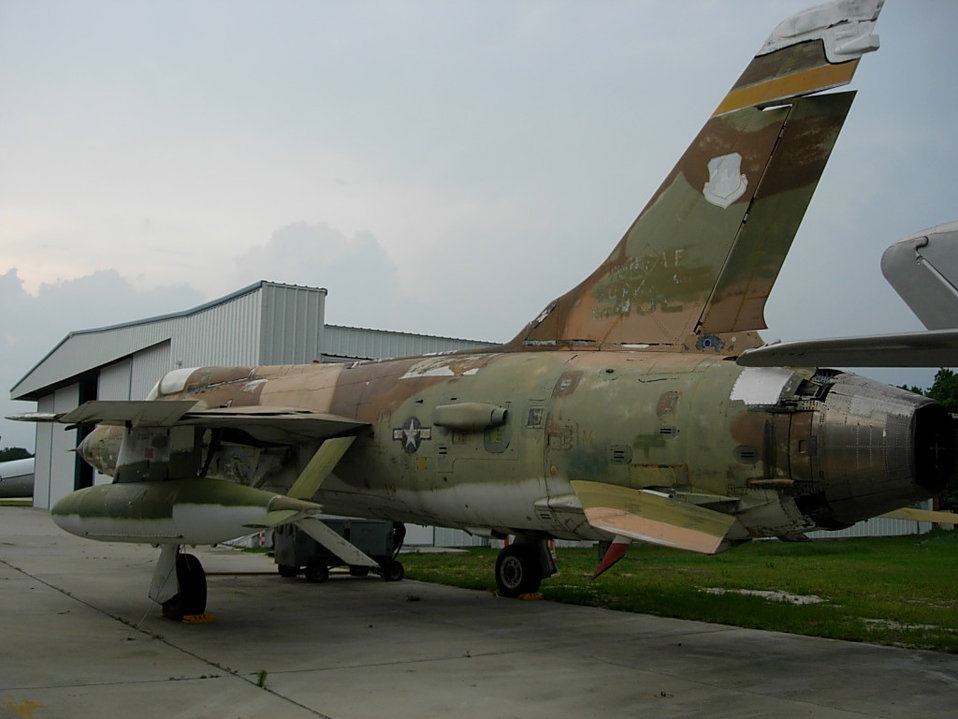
A Republic F-105D Thunderchief (s/n 60-0492, c/n D-180) at the Valiant Air Command Warbird Museum, Titusville, Florida (USA).